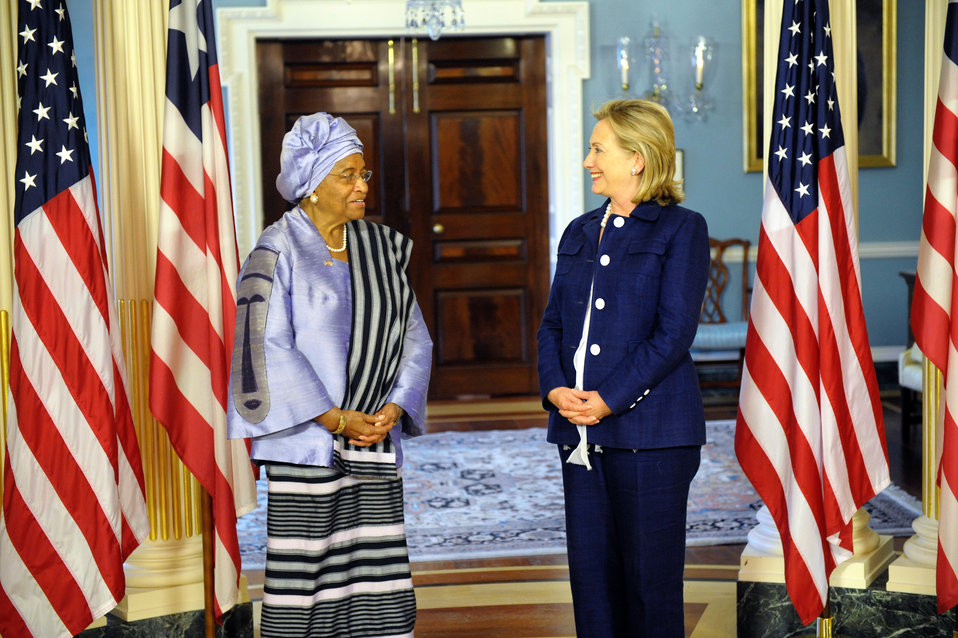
Secretary Clinton Shakes Meets With Liberian President Ellen Johnson Sirleaf

U.S. Secretary of State Hillary Rodham Clinton meets with Liberian President Ellen Johnson Sirleaf at the U.S. Department of State in Washington, D.C., on June 23, 2011.